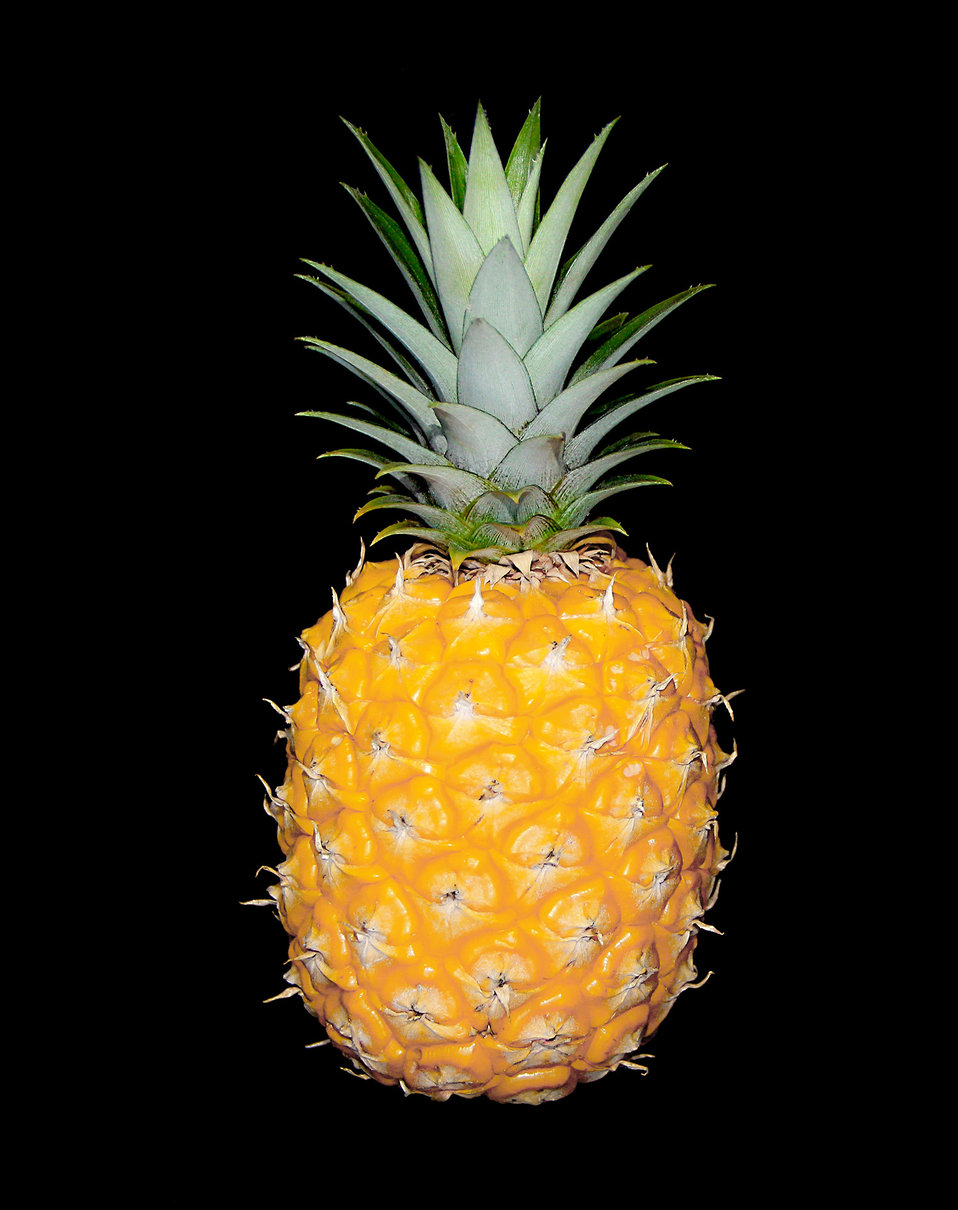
Pineapple on black background.